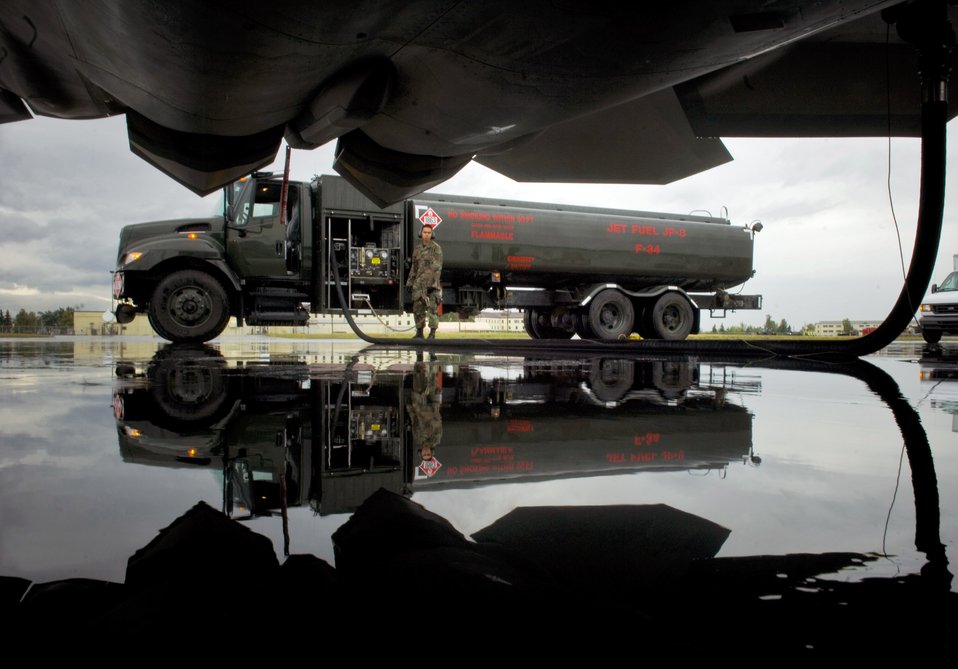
Air Force fighter squadron celebrates 90th

Airman 1st Class Michael Herman of the 3rd Logistics Readiness Squadron Fuels Flight refuels the F-22A Raptor after a demonstration Aug. 20 at Elmendorf Air Force Base, Alaska. The flight helped to celebrate the 90th Fighter Squadron's 90th anniversary.